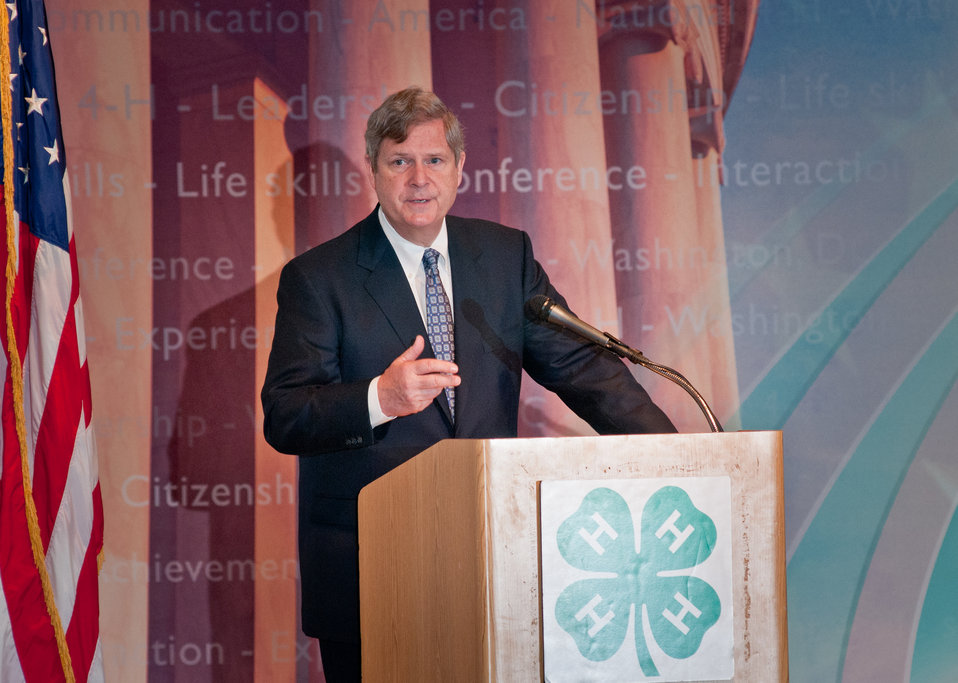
U.S. Department of Agriculture (USDA) Secretary Tom Vilsack delivers the keynote remarks to approximately 300 youth members, Extension Educators and 4-H Adult Volunteers from across the nation, as well as U.S. Territories at the 2013 National 4-H Conference, on Monday, April 8, 2013 in Chevy Chase, MD. Also speaking at the event is Agriculture Departmental Management Office of Advocacy and Outreach Director Carolyn Parker and National Institute of Food and Agriculture Director Dr. Sonny Ramaswamy. The youth delegates are in grades 10-12 (15-19 years old). The purpose of the conference is to 1) engage 4-H youth in personal development experiences that will increase knowledge, resources, and skills; 2) discuss topics affecting youth and 4-H programming nationwide; and 3) empower and mobilize 4-H youth to create positive social change in their communities in a meaningful and genuine way. The conference also reinforces the rich history of 4-H and its valuable tie to USDA, Cooperative Extension and the Land-Grant University System.